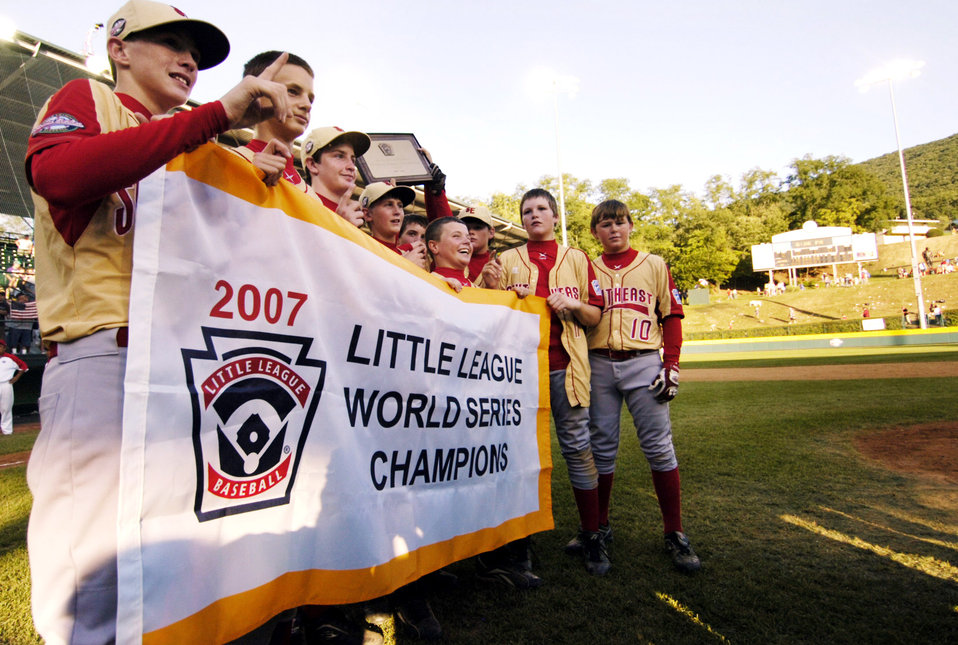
Little League World Series champs take fame in stride

Players on the Warner Robins American Little League team hold up their Little League World Series Championship flag after their 3-2 win over Japan Aug. 26.